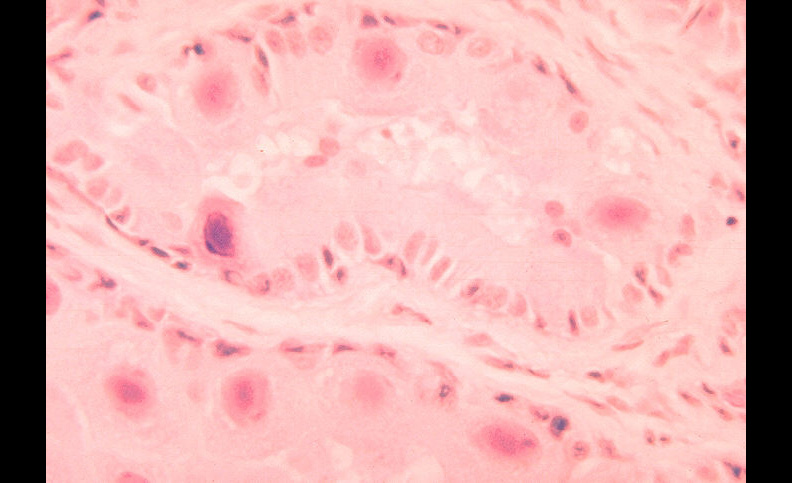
Histopathology of cytomegalovirus infection of kidney.